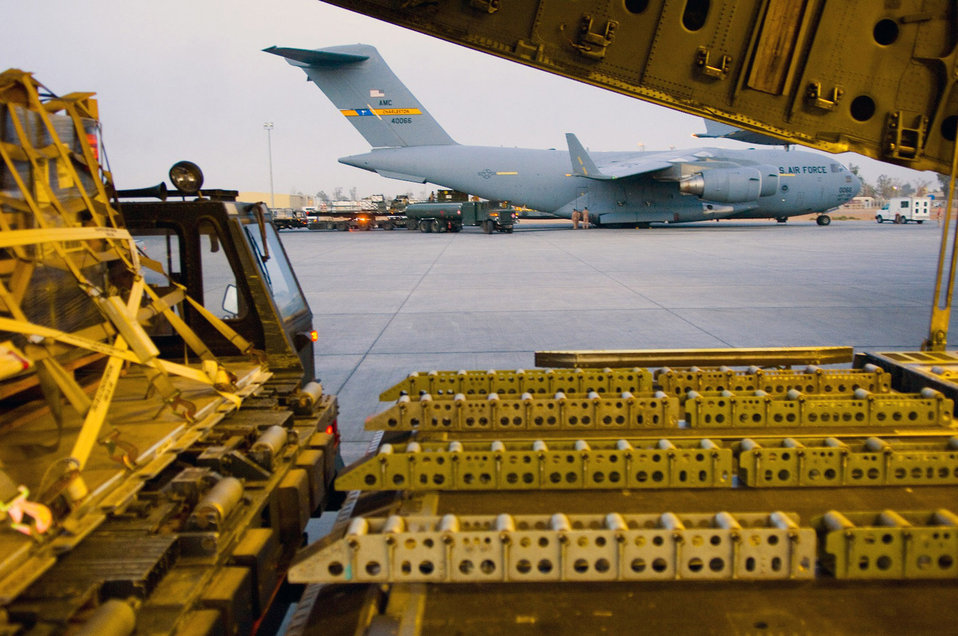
Balad aerial port bests cargo movement record

C-17 Globemaster IIIs play a key part in delivering supplies to bases around the area of operations in Southwest Asia. C-17s were among the aircraft downloaded by 332nd Expeditionary Logistics Readiness Squadron Aerial Port Flight members to break the previous single-day cargo movement record by more than 100 tons Dec. 6 at Balad Air Base, Iraq.